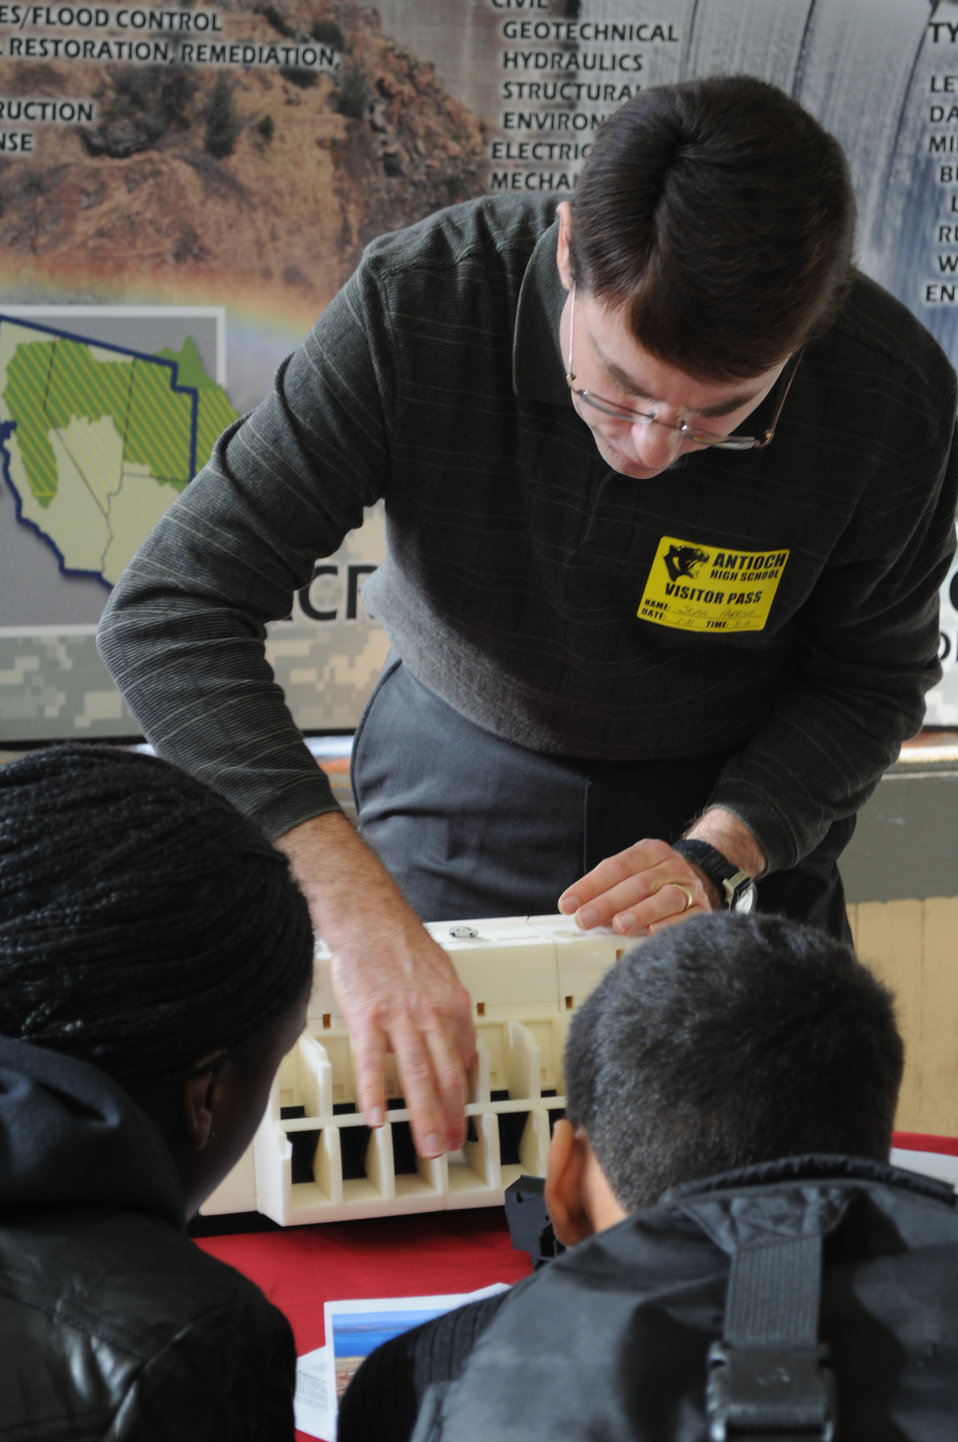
ANTIOCH, Calif. – U.S. Army Corps of Engineers Sacramento District senior electrical engineer John Parrish uses a 3-D scale model of the Folsom auxiliary dam spillway to demonstrate flood gate operations for students at Antioch High School here Jan. 31.

Parrish and structural design section chief Roger Zemba were invited to share stories of their educational and vocational backgrounds and explain the Corps’ various missions to more than 120 freshmen enrolled in the school’s four-year Academy of Engineering and Design for a Greener Environment (EDGE). The new academy incorporates a curriculum that links science and math education to engineering careers.

The plastic spillway model was created at the Sacramento district to aid engineers in construction of the project. It was loaned to the engineers for use at the event, to demonstrate to the students how precise the models can be using computers. “Computer technology has changed so much in engineering today,” said Parrish, who has been with the Corps since 1987. “These future engineers will learn a whole different skill set than I did as a student.”